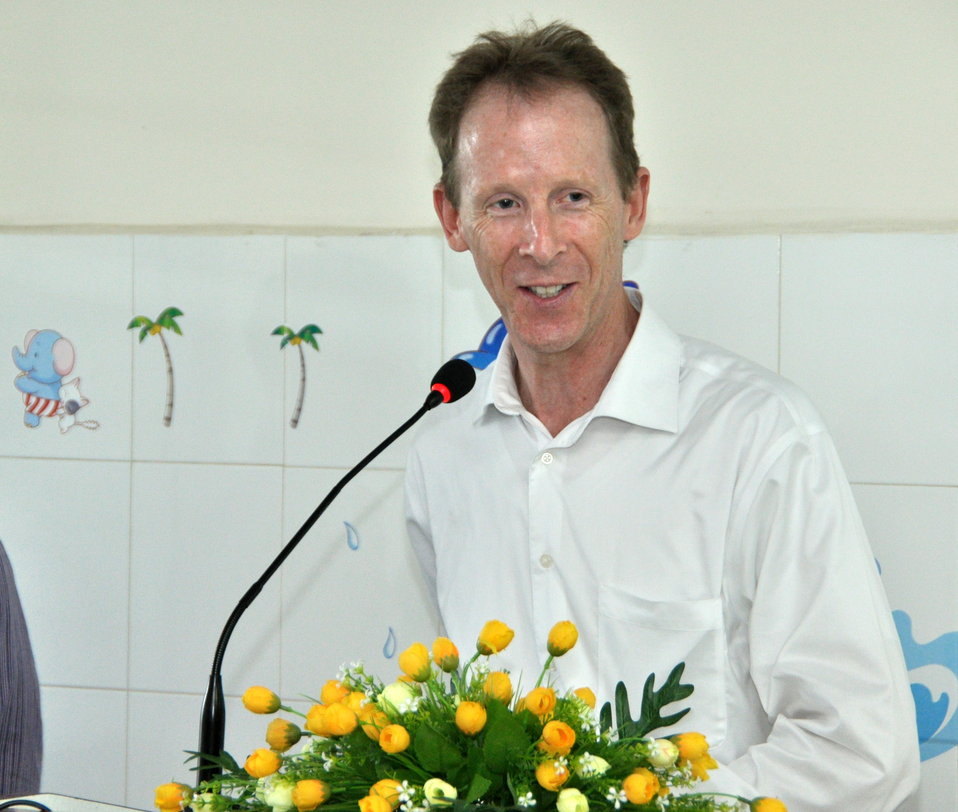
USAID Mission Director Joakim Parker and USAID Partners Join to Open Rehabilitation Department at Women's and Children's Hospital of Danang

July 16, 2013